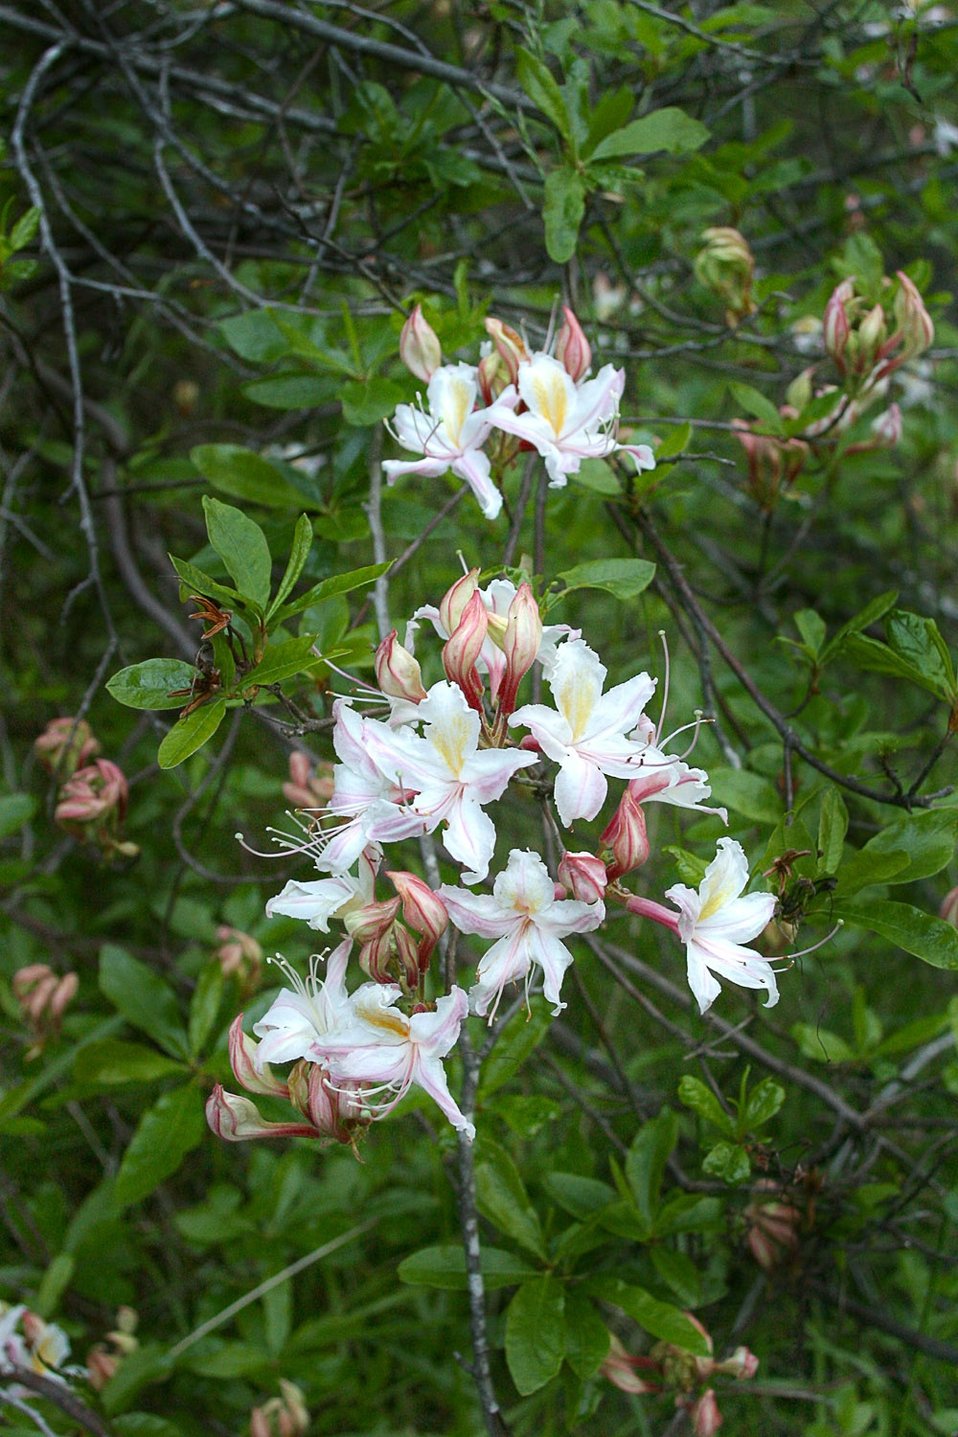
Wild section of the Rogue River from Grave Creek to Foster Bar May 19 to May 22. Azalea across the meadow from Whisky Creek Cabin.